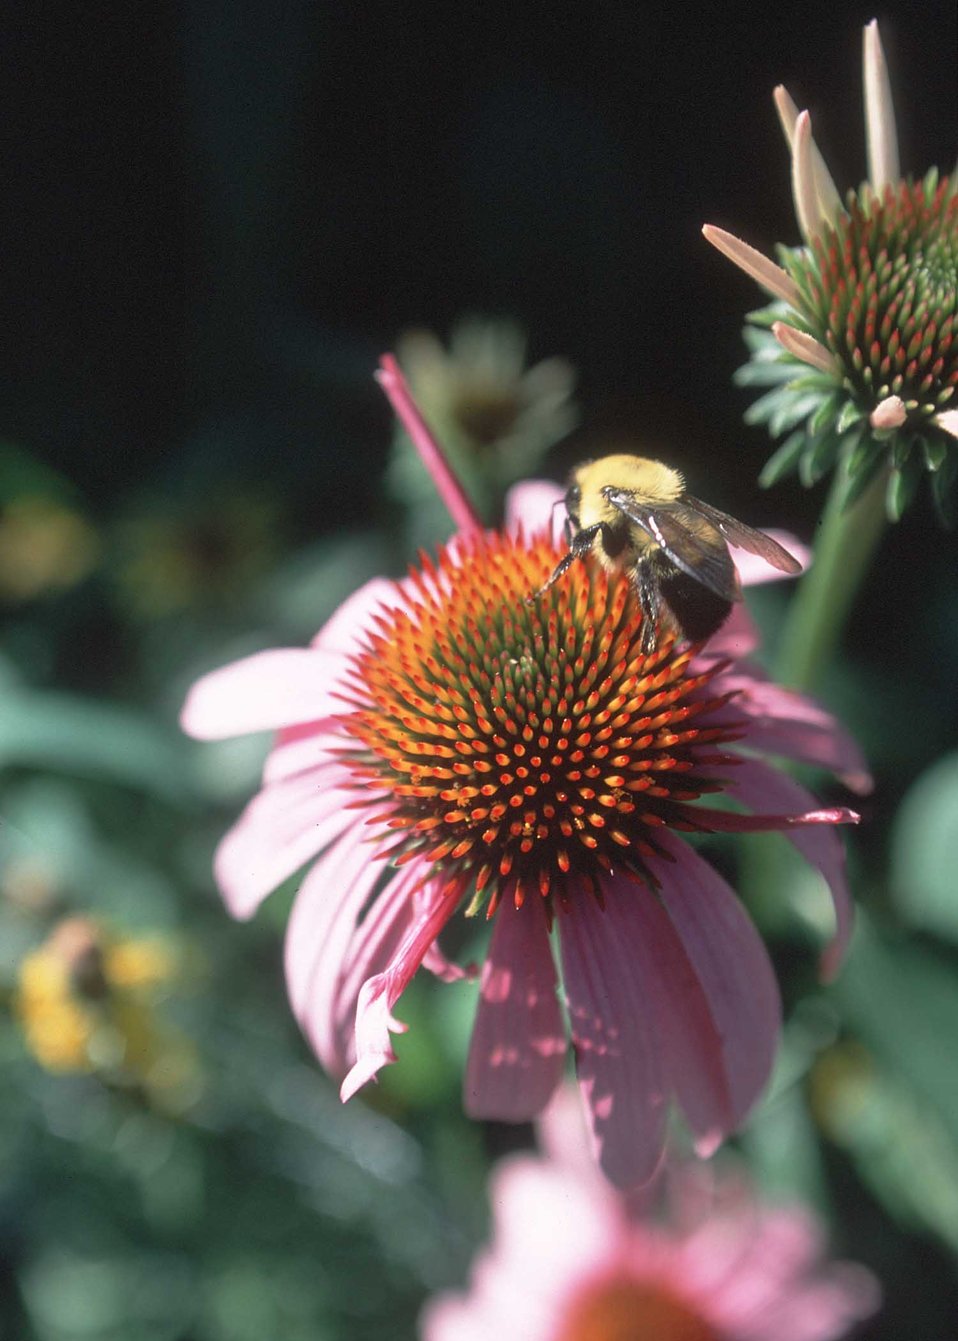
Bumblebee pollinating a purple coneflower.